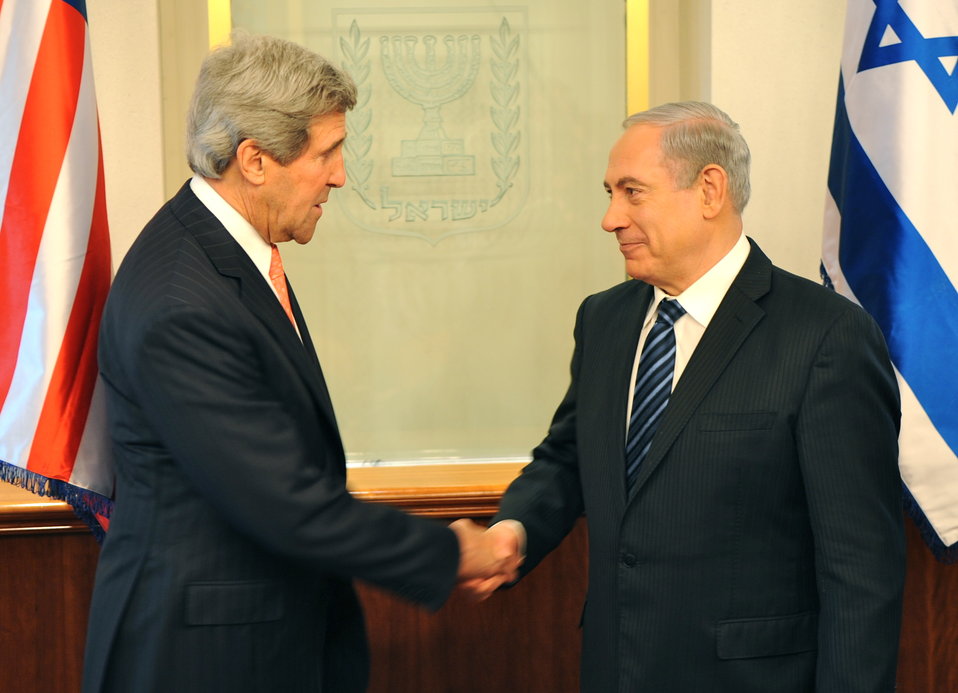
Secretary Kerry Greets Prime Minister Netanyahu

U.S. Secretary of State John Kerry is greeted by Israeli Prime Minister Benjamin Netanyahu prior to their meeting in Jerusalem on May 23, 2013.